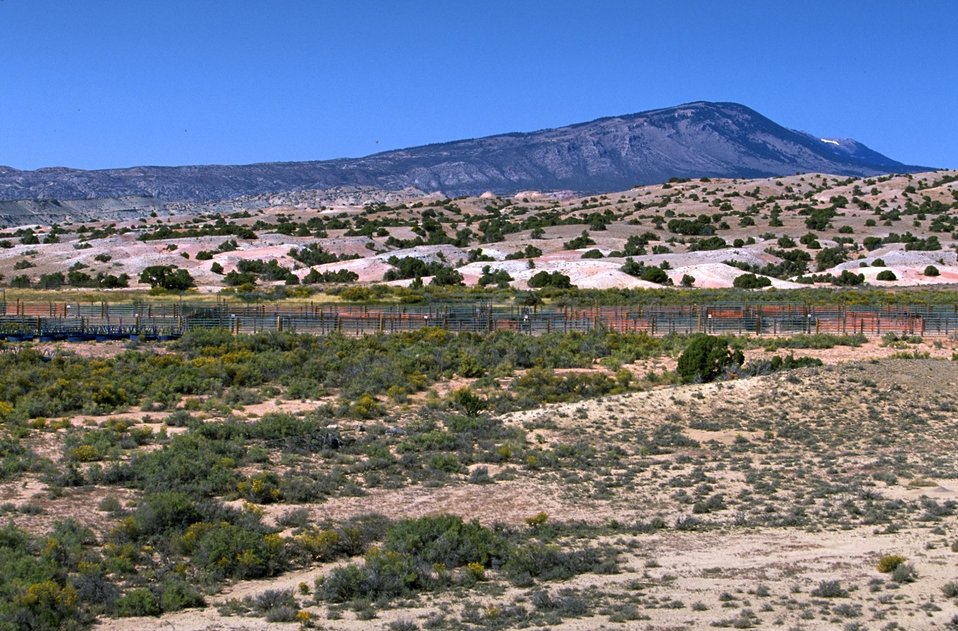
Britton Spring corrals in the Pryor Mountain National Wild Horse Range